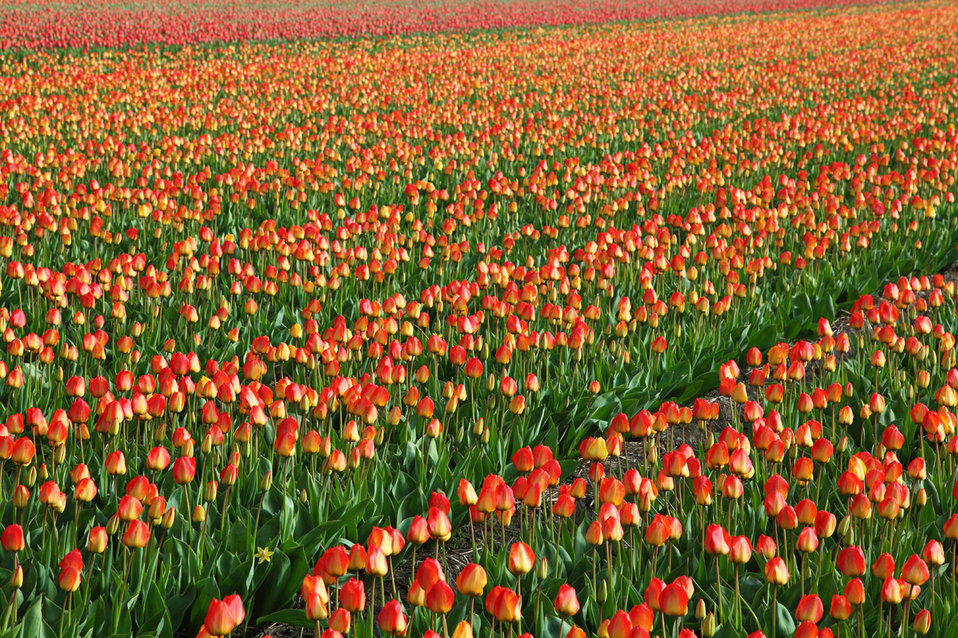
Tulip field background

Colorful tulip field background image.